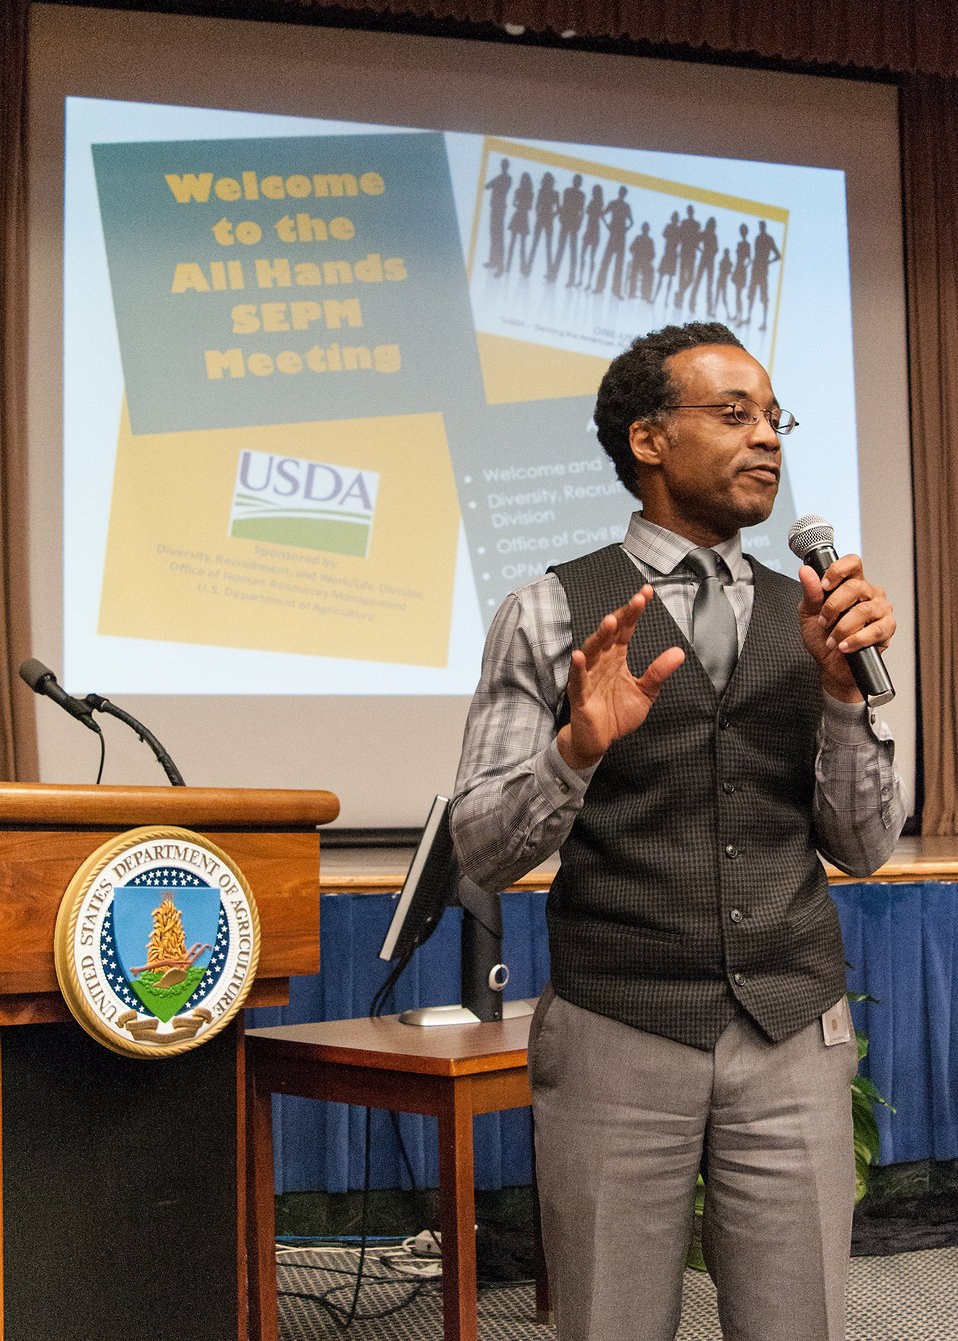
U.S. Office of Personnel Management, Training, Compliance and Strategy Office of Diversity Inclusion Deputy Director Bruce Stewart discusses Strategies to Increase Collaboration between Federal agencies at the First Annual All Hands Special Emphasis Program Managers (SEPM) Meeting at the U.S. Department of Agriculture Jefferson Auditorium in Washington, D.C. on Wednesday, Mar. 13, 2013.